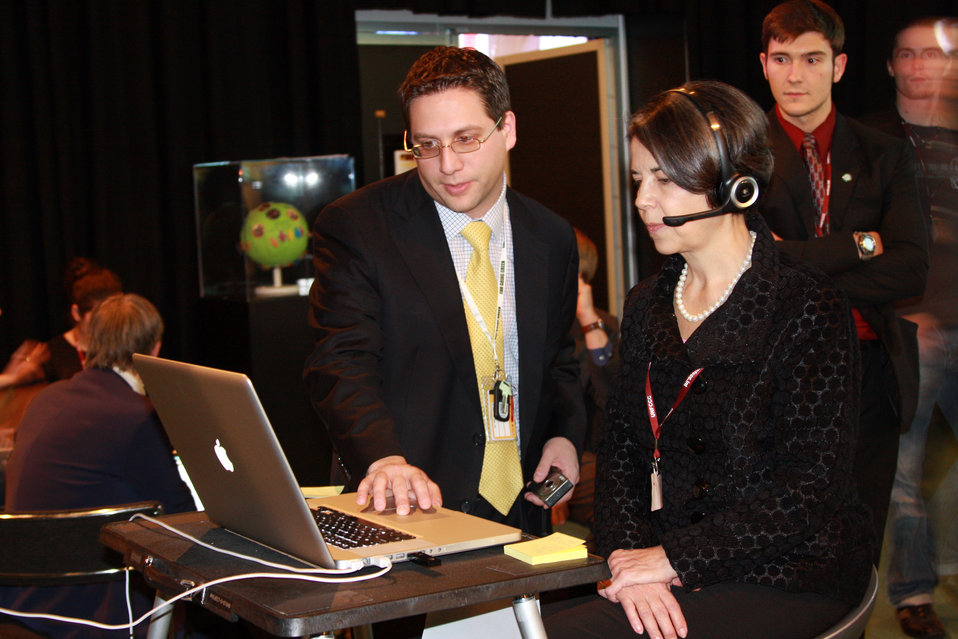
Web Chat With French Students

U.S. Undersecretary for Global Affairs Maria Otero with Bureau of European Affaris Public Affairs Specialist Shai Korman as she participates in a web chat with French student participants of the Burean of European Affairs Alumni Climate Challenge at COP15 (Conference of the Parties to the UN Framework Convention on Climate Change) in Copenhagen, Denmark December 10, 2009.